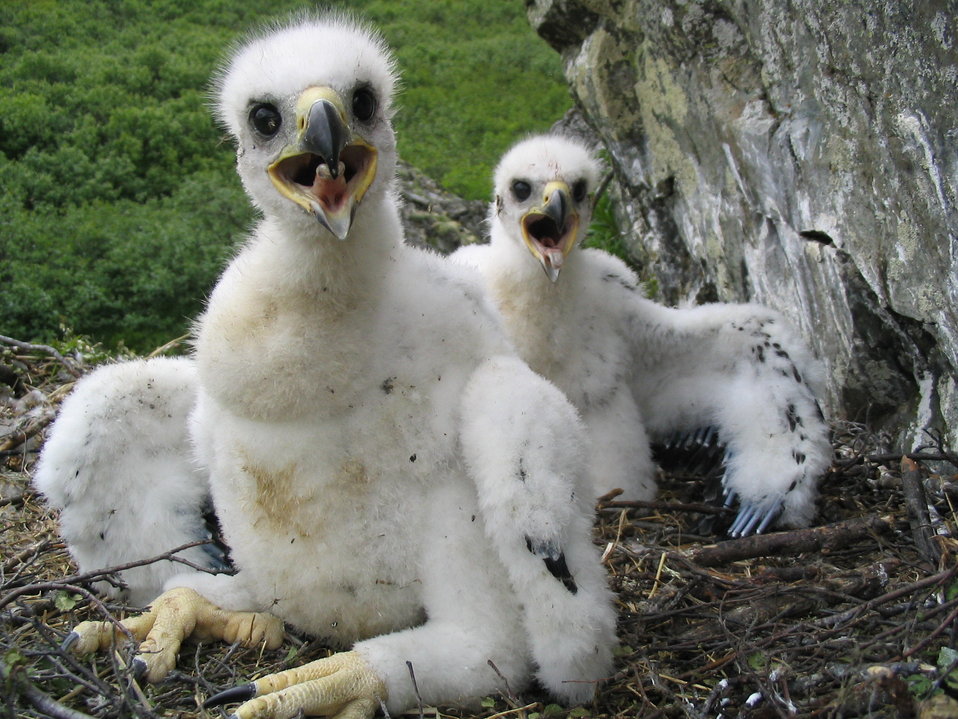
Gyrfalcon nestlings

In 2004 a multi-year research project was initiated investigating Gyrfalcons within the YDNWR.

USFWS Yukon Delta NWR